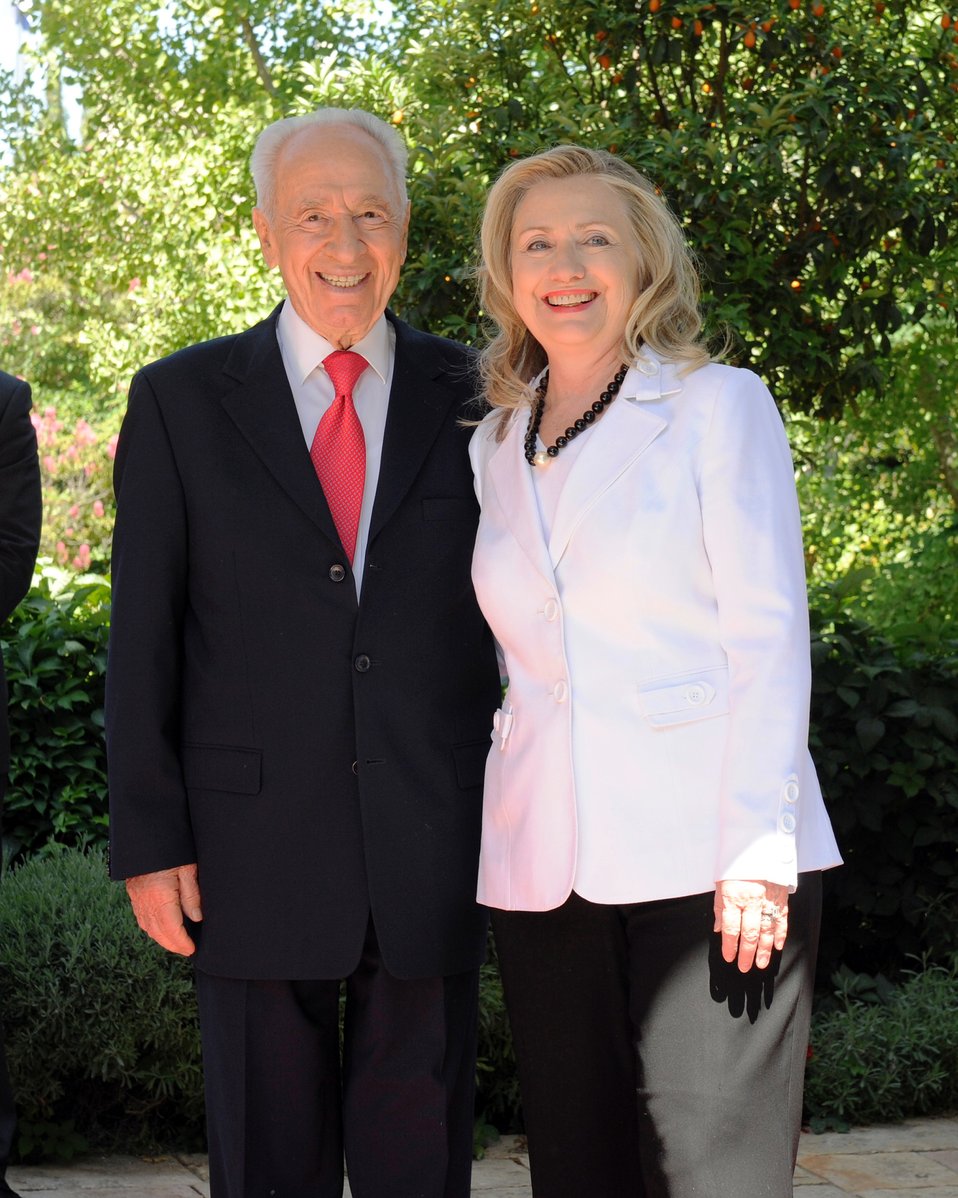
Secretary Clinton With Israeli President Peres

U.S. Secretary of State Hillary Rodham Clinton meets with Israeli President Shimon Peres in Jerusalem on July 16, 2012.